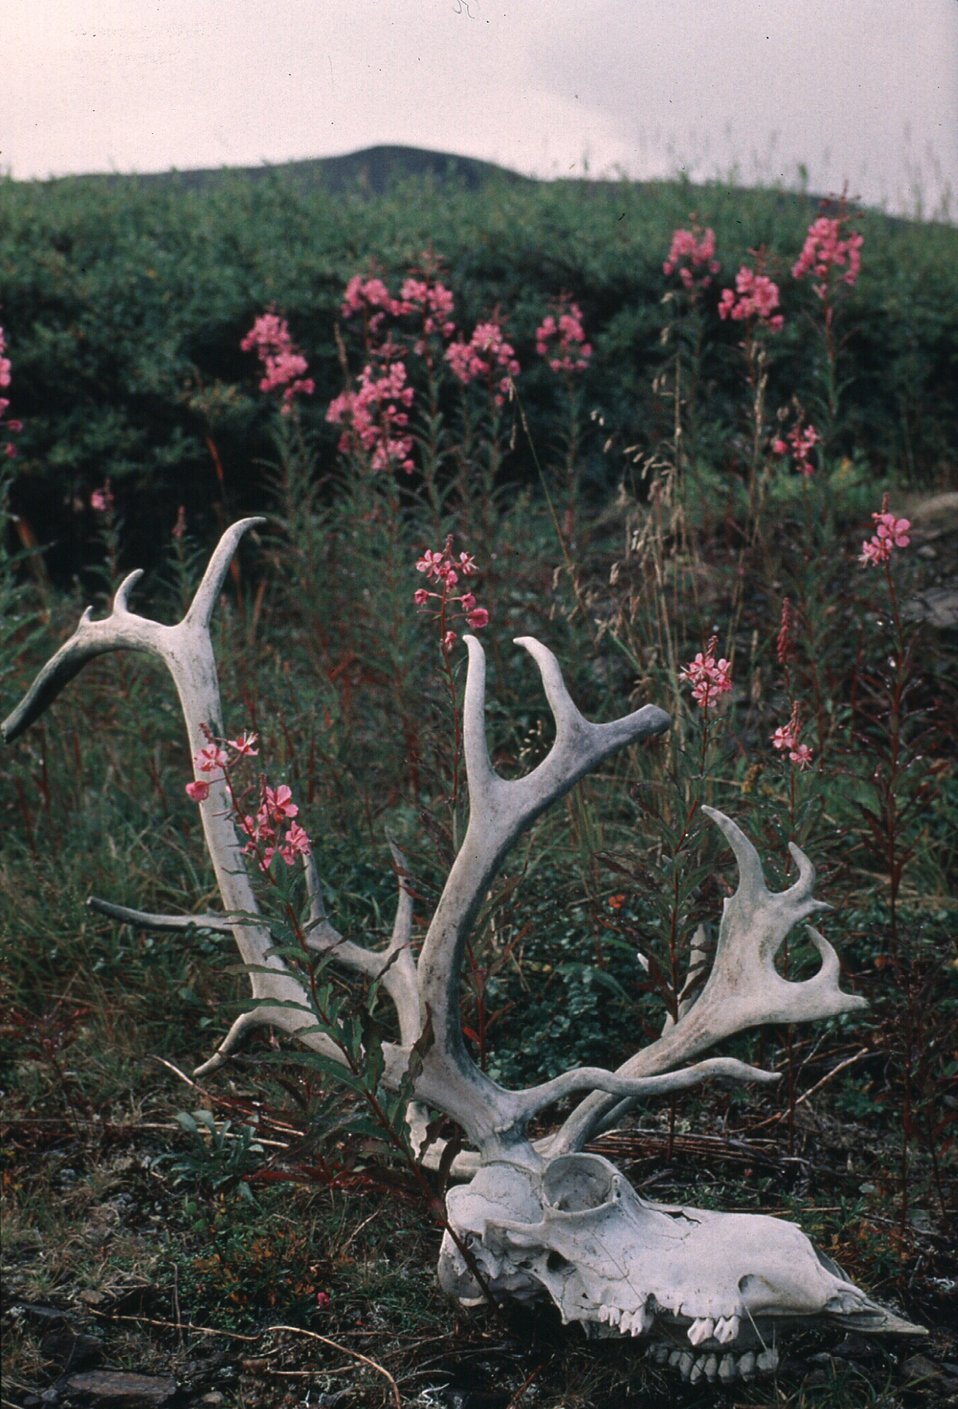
Caribou skull and tundra colors, Seward Peninsula near Salmon Lake